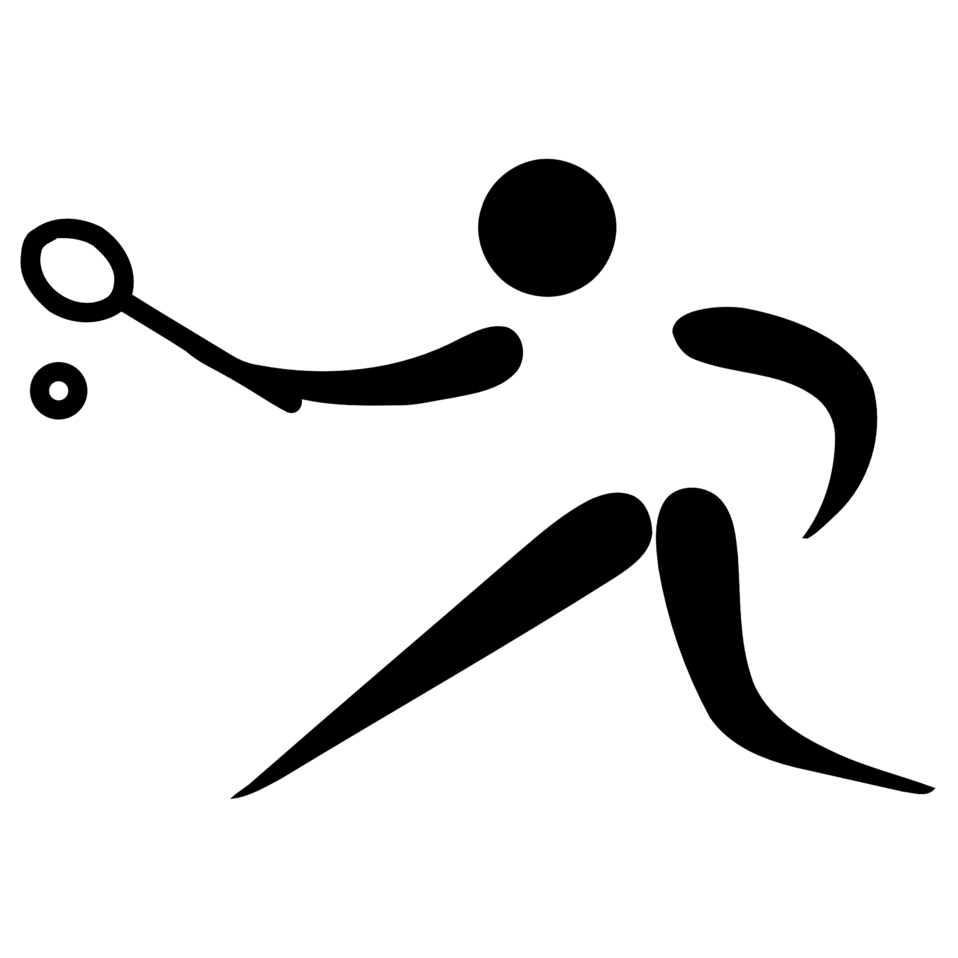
Pictograms of Olympic sports - Raquets. This is unofficial sample picture. Images of official Olympic pictograms for 1948 Summer Olympics and all Summer Olympics since 1964 can be found in corresponding Official Reports.